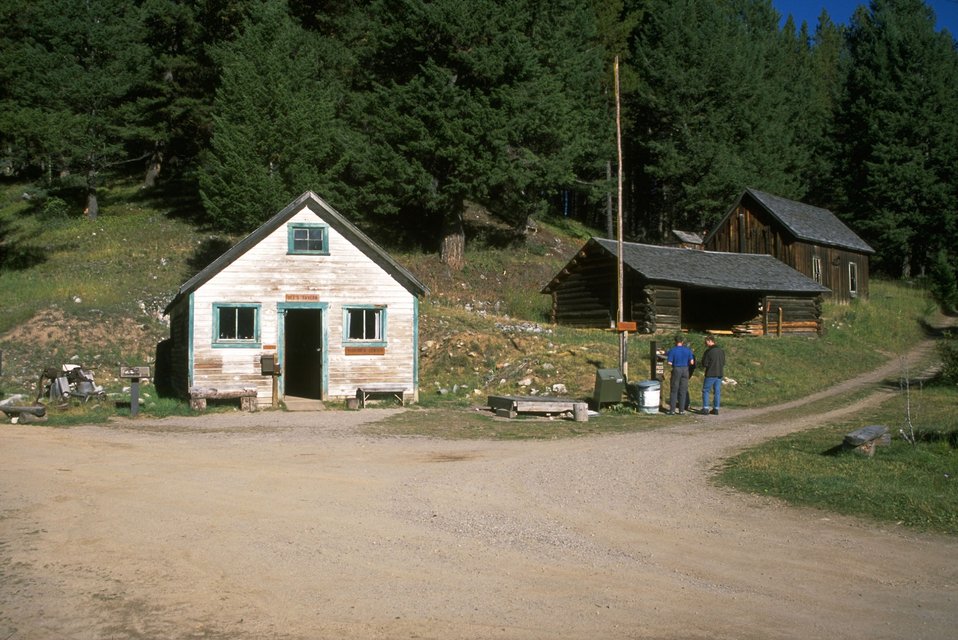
Ole's Tavern at Garnet Ghost Town